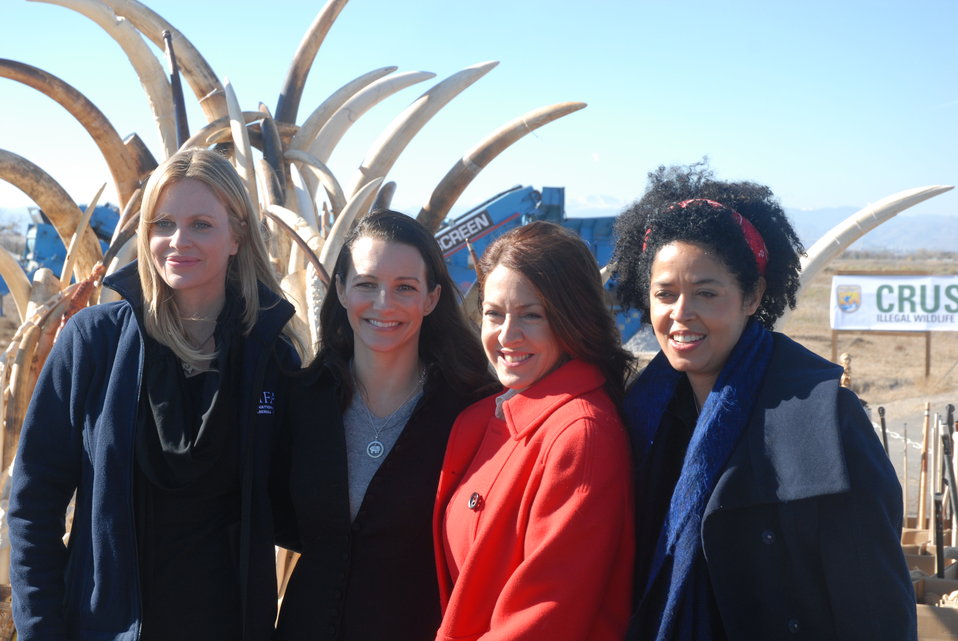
Celebrities show support for wildlife conservation at the U.S. Ivory Crush.

Kristin Bauer, actress and IFAW Ambassador, Kristin Davis, actress and Patron for The David Sheldrick Wildlife Trust, and Joely Fisher, actress and IFAW Ambassador, pose with Dr. Paula Kahumbu, CEO of WildlifeDirect, at the U.S. Ivory Crush.